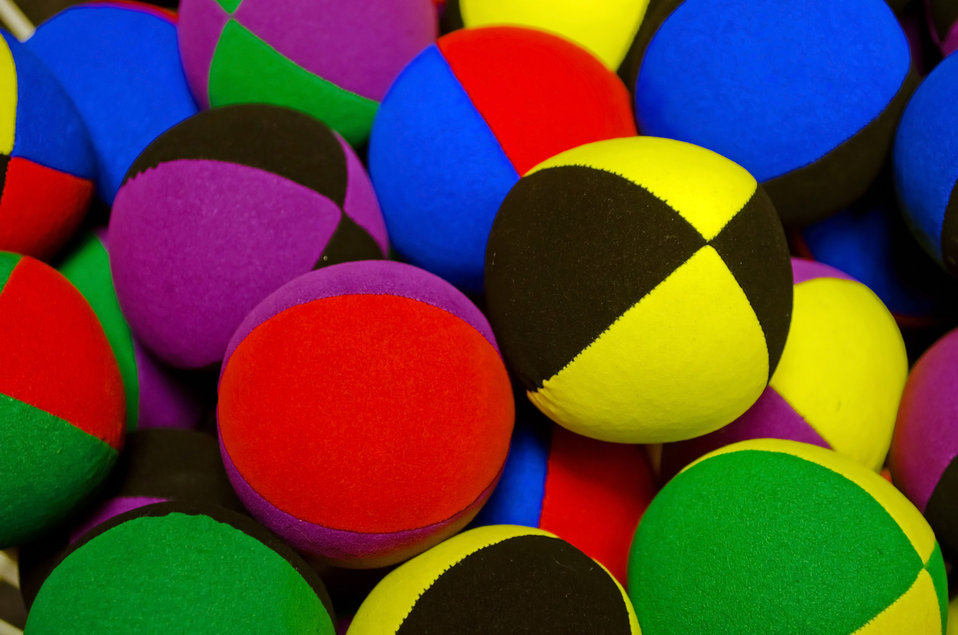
The colored balls.